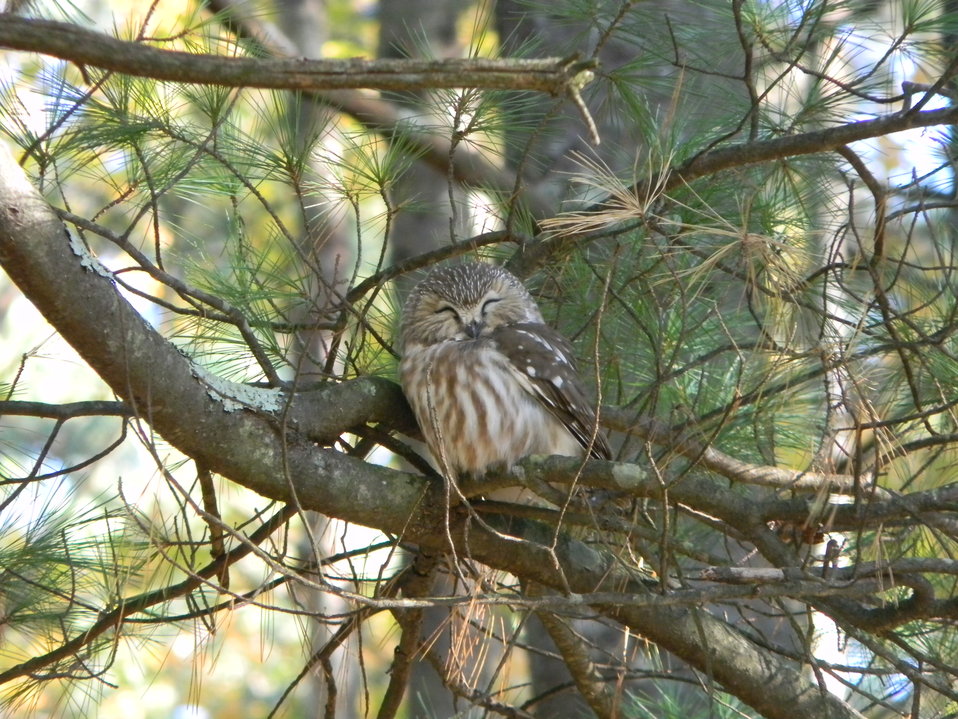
Northern Saw-whet Owl at Rachel Carson National Wildlife Refuge.

Credit: Bri Rudinsky/USFWS

www.fws.gov/refuge/rachel carson/